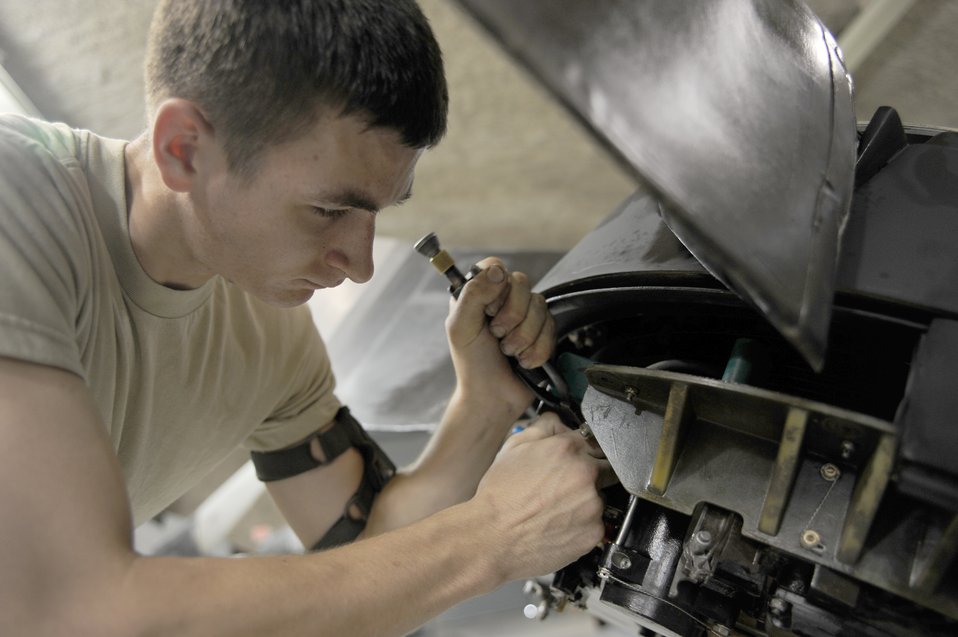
C-130 propeller blades

Senior Airman Brett Cox works on an electrical harness during final installation of a C-130 propeller blade Aug. 30, 2010, at a base in Southwest Asia. Airman Cox is a jet engine mechanic with the 379th Expeditionary Maintenance Squadron and is deployed from Hurlburt Field, Fla.